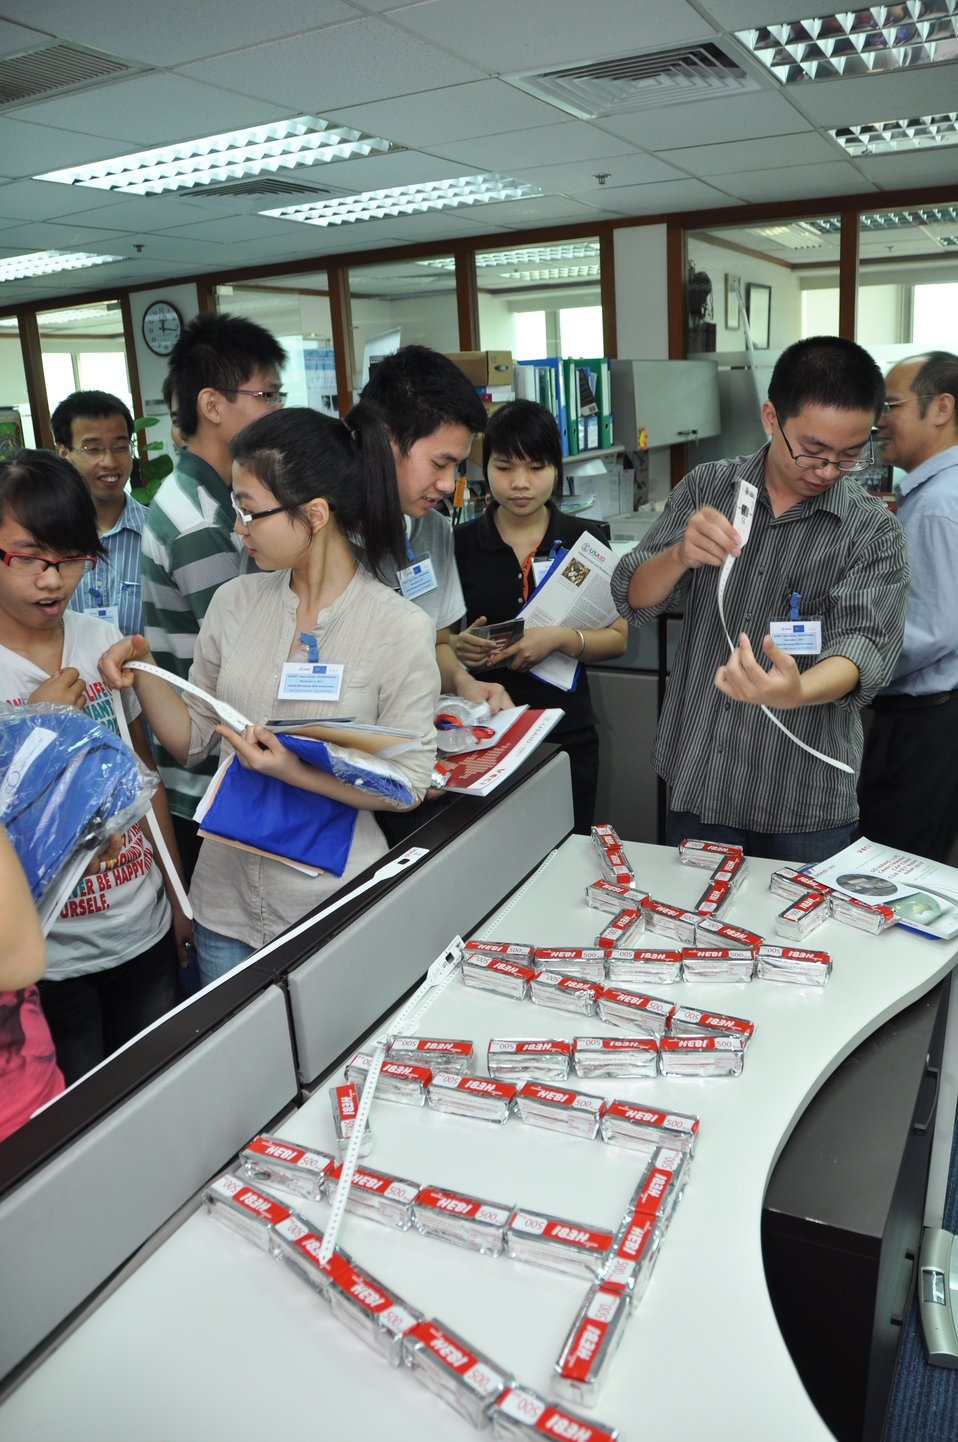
USAID Vietnam Open House, November 3, 2011